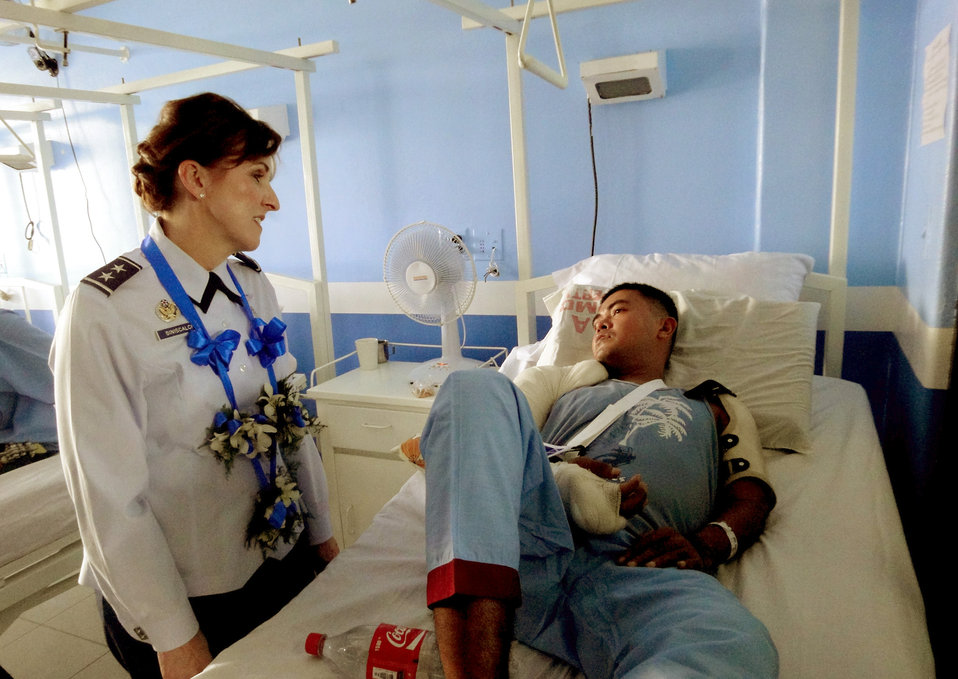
Military nursing symposium

Maj. Gen. Kimberly Siniscalchi visits a patient in the orthopedic ward at the Armed Forces of the Philippines medical center Aug. 29, 2010, in Manila, Philippines, during the 4th annual Asia-Pacific Nursing Conference Symposium, where more than 200 nurses from 13 countries were in attendance. General Siniscalchi is the assistant Air Force Surgeon General of Medical Force Development and Nursing Services, at the Office of the Surgeon General.